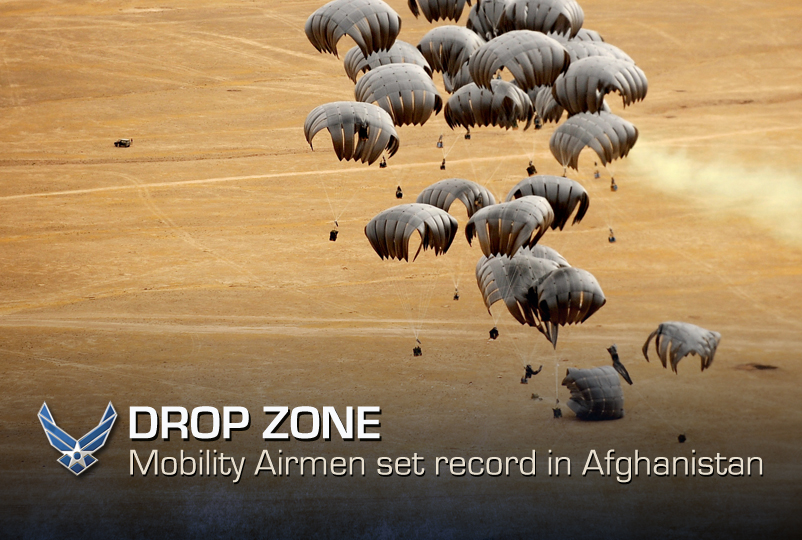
Drop Zone